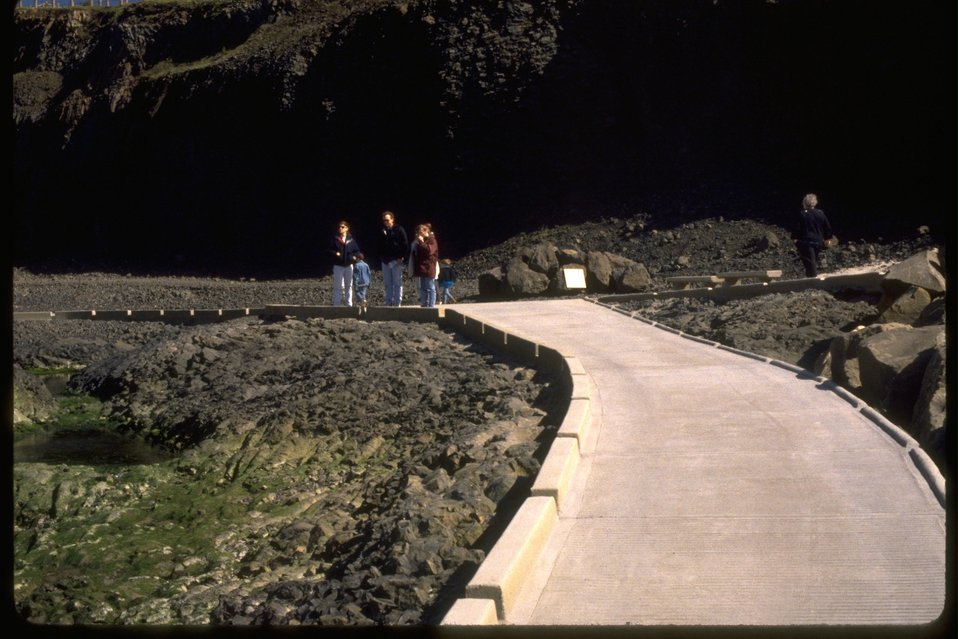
Walkway giving access to tidepools at Quarry Cove in the Yaquina Head ONA.